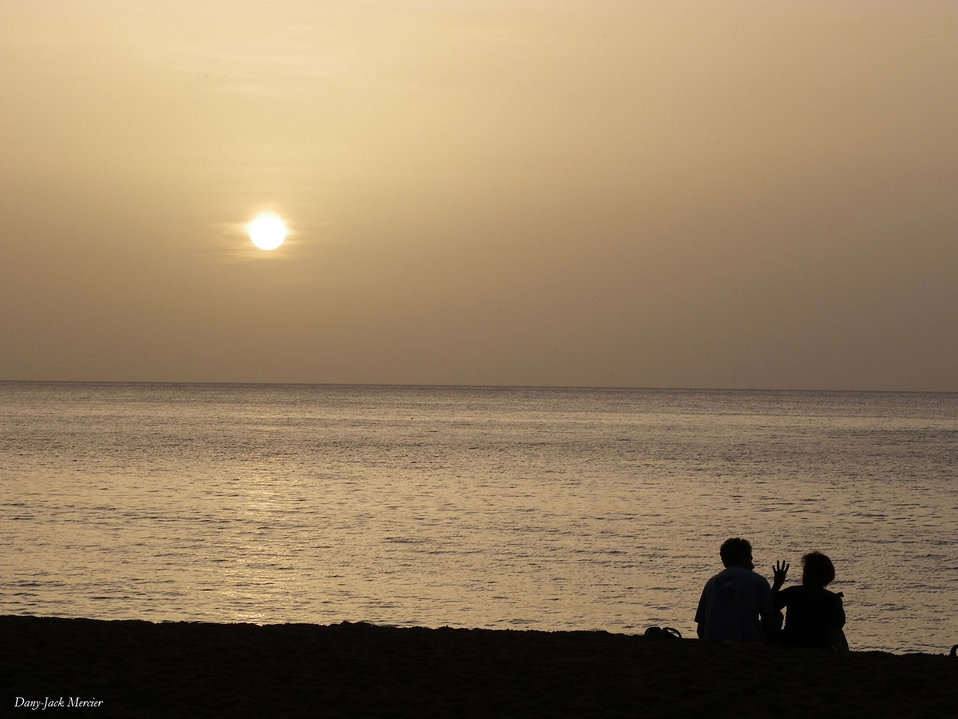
Sunset in deshaies

Two lovers in the evening on the beach of deshaies in guadeloupe.